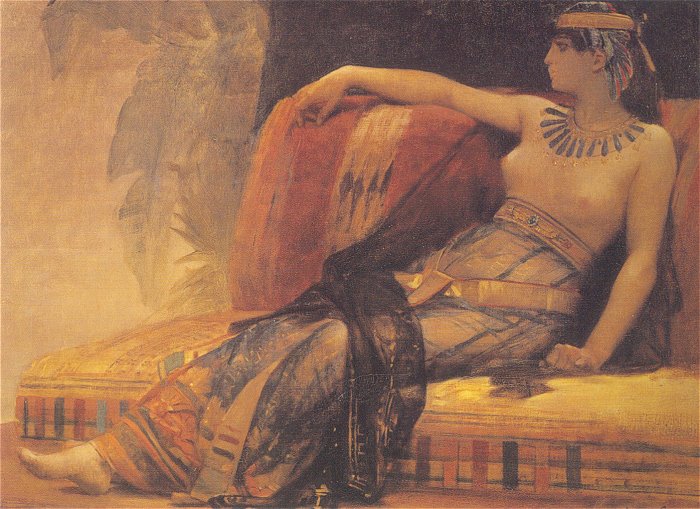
Alexandre cabanel - cléopatre (étude)